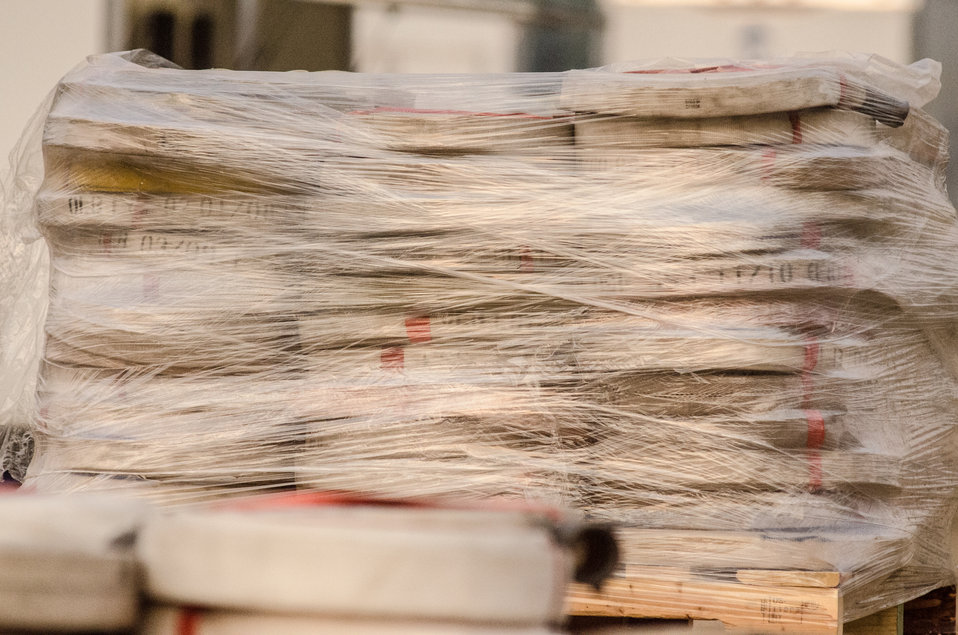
Used fire hoses, at the Beaver Creek Fire, west of Hailey, ID, that have passed inspection for serviceability, and have been mechanically wound, are organized according by type, diameter and length, then palletized for transportation to where they are needed, on Wednesday, Aug 21, 2013. Structure protection at the scale of this fire often threatens homes, infrastructure, sacred and historic locations, requiring the use of miles of hose to preposition hand lines (water hoses) for fighting fires by engine crews, and for sprinklers to keep remote homes and structures surrounding the areas wet.